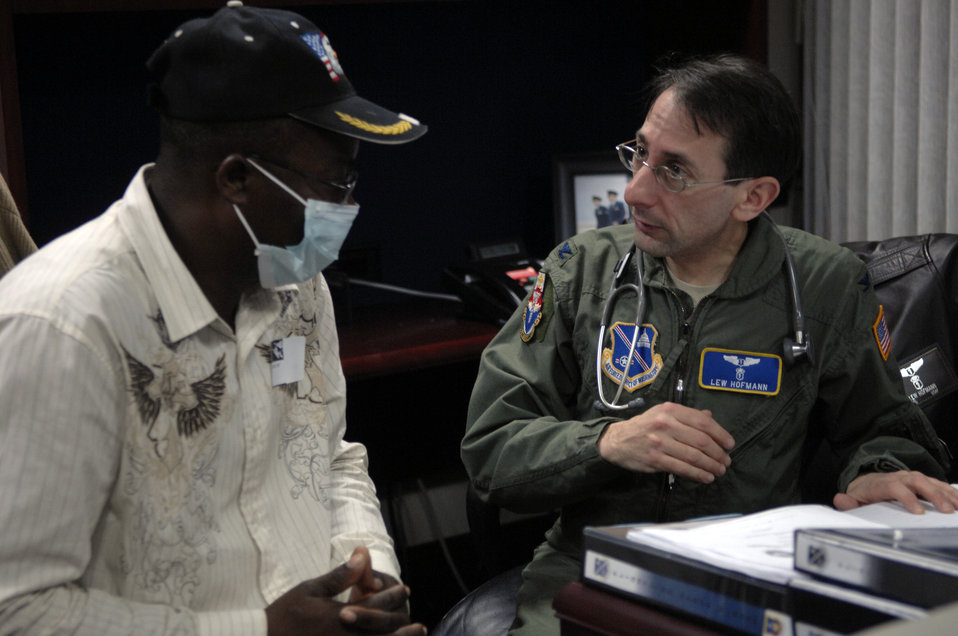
Haitian earthquake survivors arrive at Joint Base Andrews

Colonel Lewis Hofmann, 779th Medical Group Pentagon Annex director, assists Joel Nicholas, a repatriated U.S. citizen, with his medical screening Jan. 17, 2010, at Joint Base Andrews. Mr. Nicholas and 21 other survivors of the 7.0-magnitude earthquake that hit Haiti Jan 12 returned to the U.S. with Secretary of State Hillary Clinton.